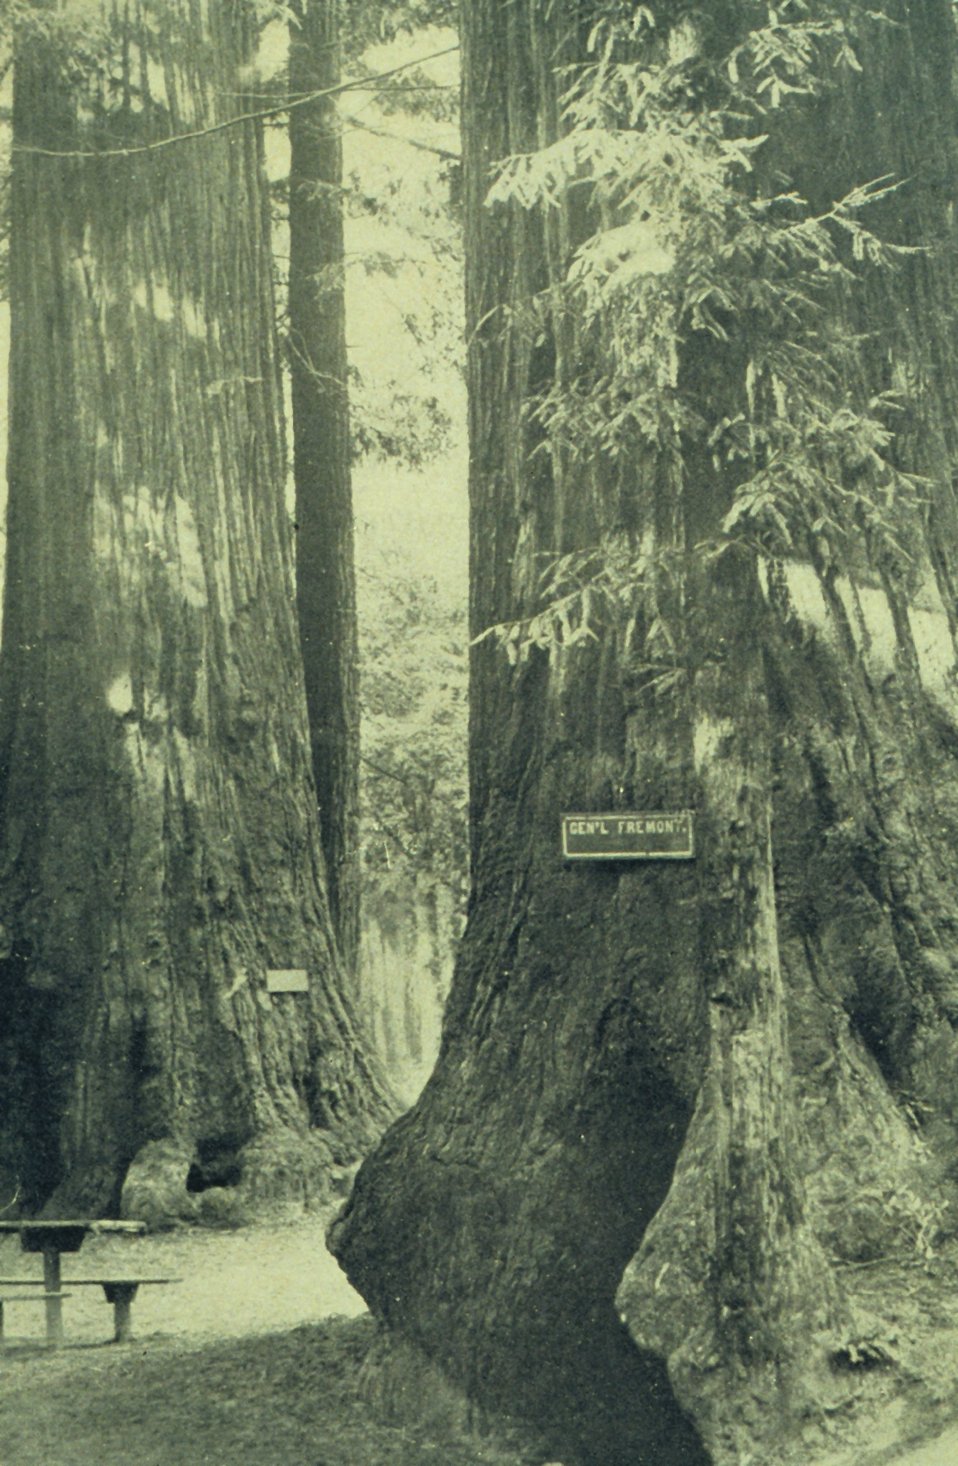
View in 'Big Trees' Grove, five miles from Santa Cruz with General Fremont tree. In: 'The City of Santa Cruz and VicinityCalifornia.' Published by The Santa Cruz Board of Trade. 1905.